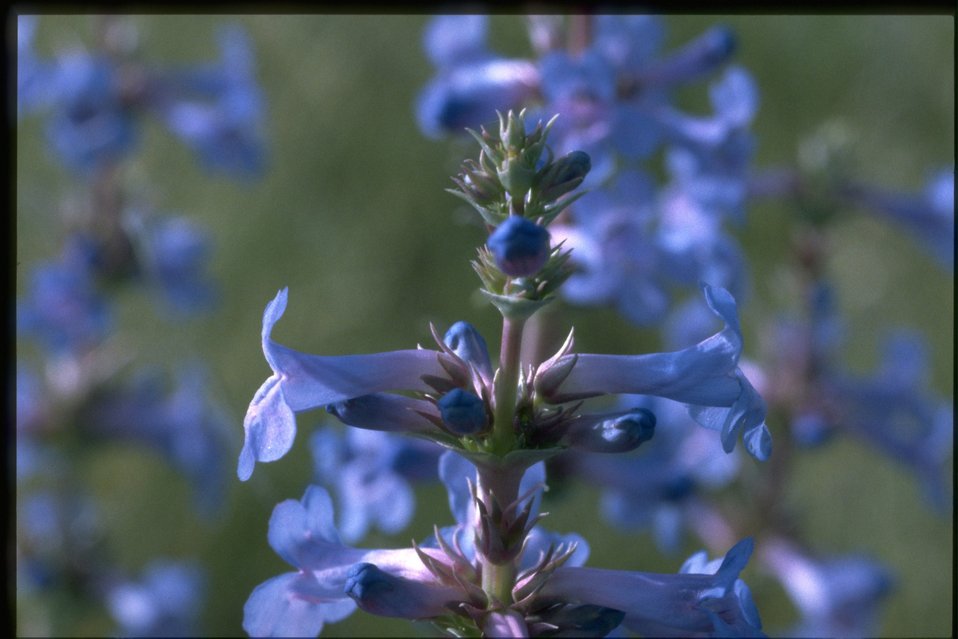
Closeup shot of Sand Penstemon (Penstemon acuminatus).